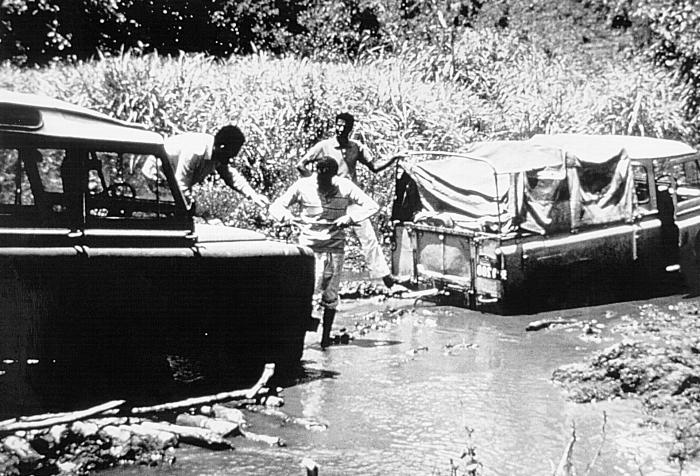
These were field clinicians during the world wide smallpox eradication efforts.